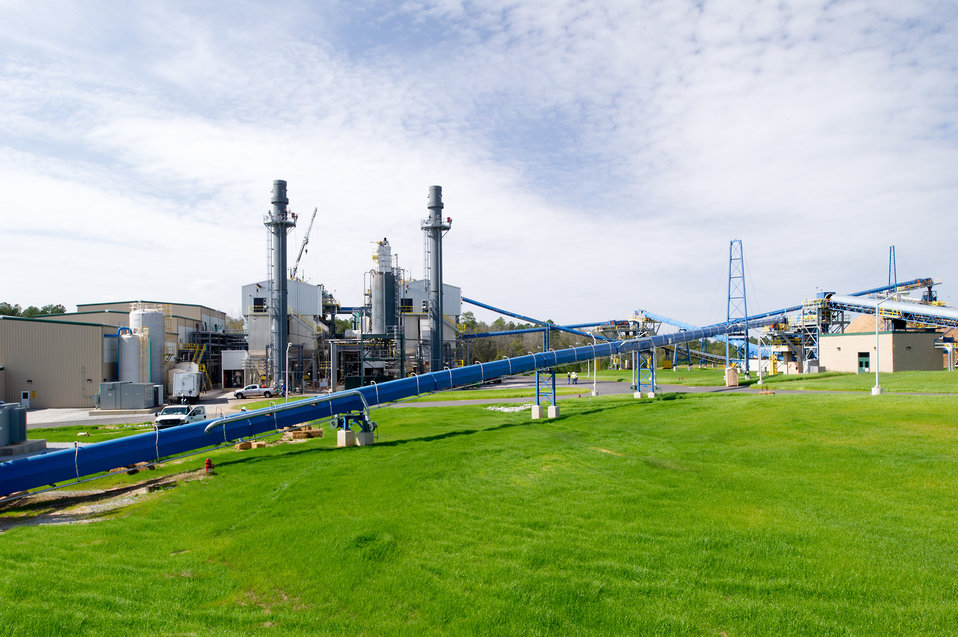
Biomass being processed at the Savannah River Site

This award-winning plant replaces a deteriorating, inefficient coal powerhouse, and has the capacity to combust 385,000 tons of forest residue annually into 20-megawatts of clean power. Under the DOE ESPC program, the energy and maintenance cost savings pays for the project.